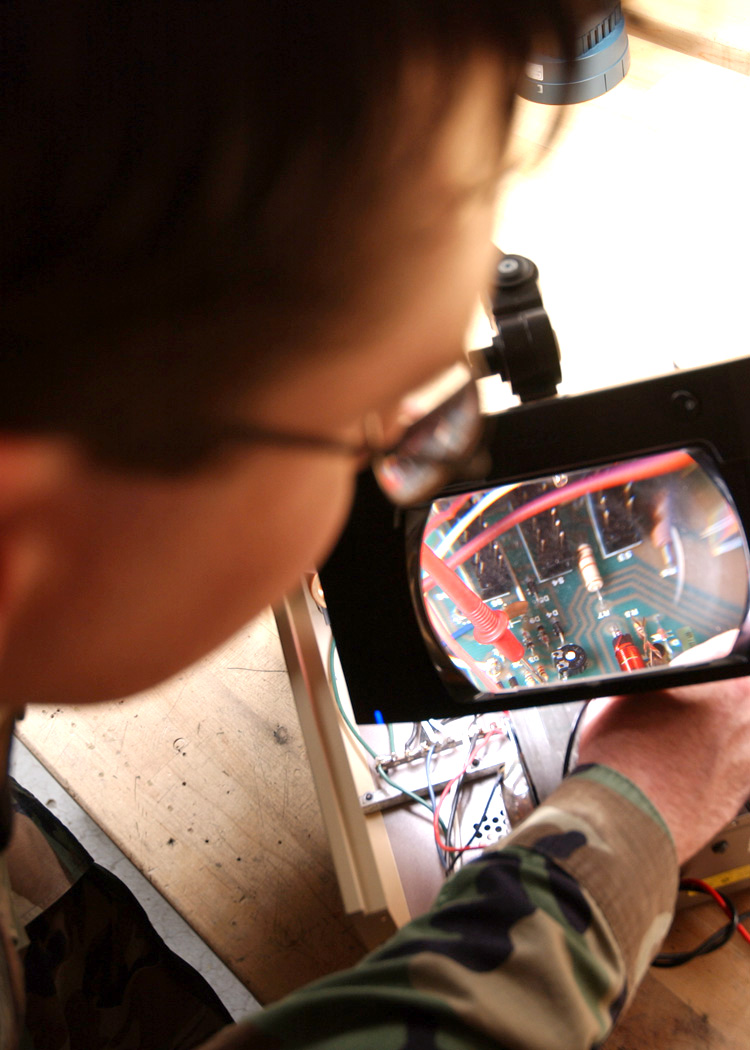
Running some tests

EIELSON AIR FORCE BASE, Alaska -- Senior Airman Nathan Edenfield uses a multimeter to test a fuse to see if it is blown. Airman Edenfield is a medical equipment repair technician with the 354th Medical Support Squadron here.